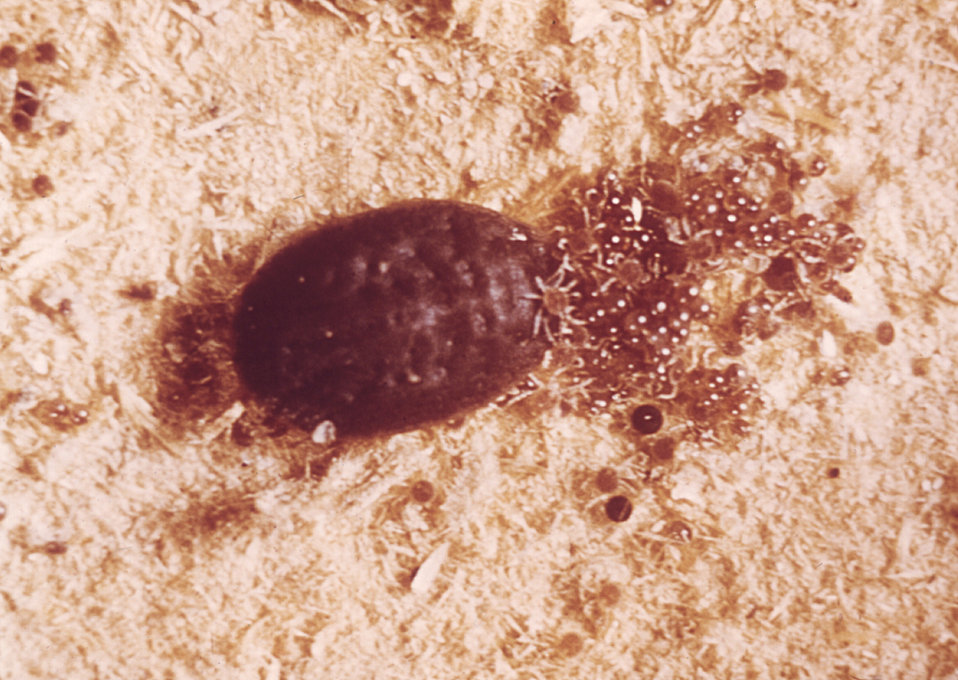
This female Argasidae 'soft tick', had laid a batch of eggs, which have hatched revealing the newborn ticks.